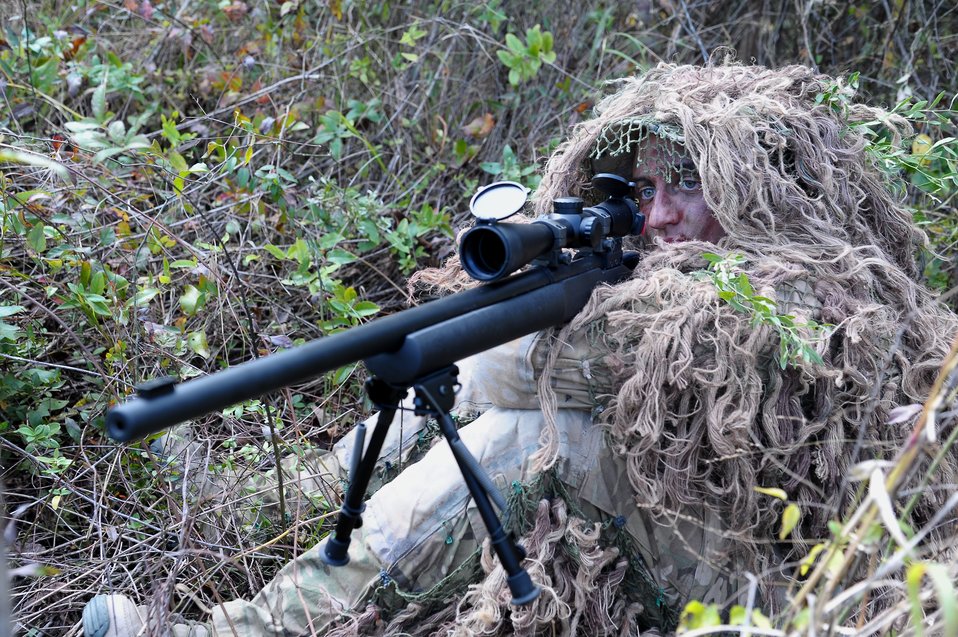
Taking aim

Airman 1st Class Tiffani Potter, 14th Security Forces Squadron demonstrates how to properly hold a sniper rifle while sitting and remain blended in to her surroundings Oct. 26 on Columbus Air Force Base. During the Close Precision Engagement Course students are taught how to maintain rifle control while allowing the least amount of visibility possible. (U.S. Air Force Photo/Airman 1st Class Charles Dickens